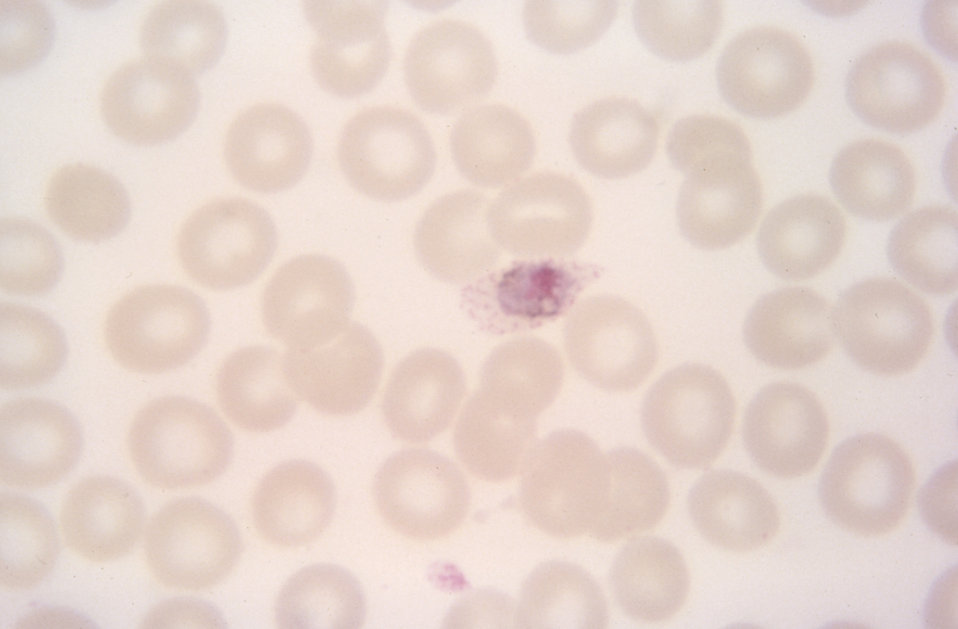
This photomicrograph reveals a growing Plasmodium ovale trophozoite within an elongated, teardrop-shaped RBC.